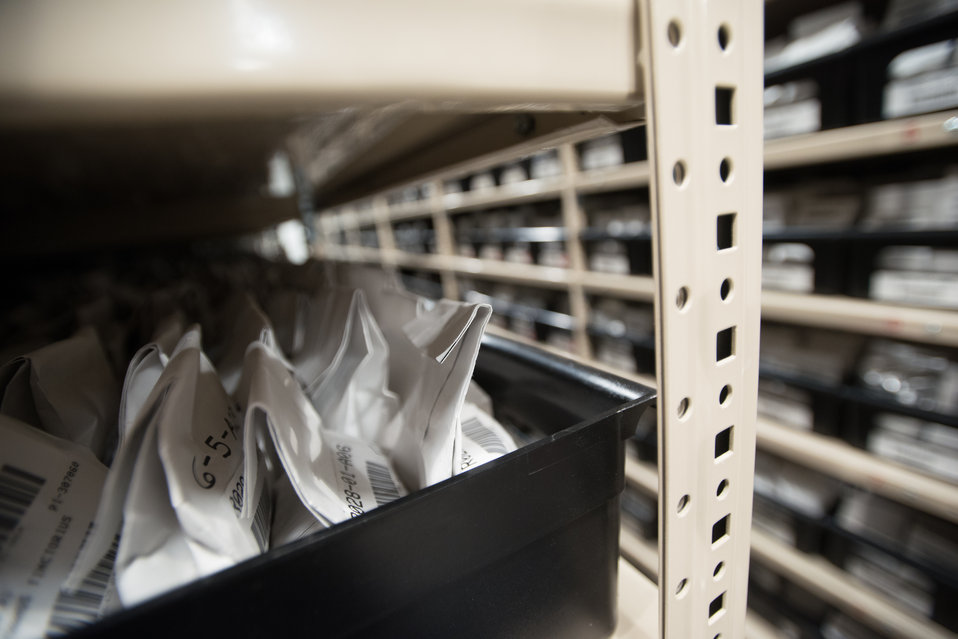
This is the U.S. Department of Agriculture's (USDA) Agriculture Research Service (ARS) National Center for Genetic Resources Preservation (NCGRP) National Plant Germplasm System (NPGS) cold storage vault, in Ft. Collins, CO on Wednesday, Nov. 6, 2013. This secure, long-term storage facility contains nearly 1 million samples of more than 13,200 plant species from the NPGS and from other international plant gene banks, as well as other U.S. government land management agencies. Most of the samples are preserved in the form of seeds. Some germplasm is also preserved as buds, cuttings, and tissue cultures. The 20 NPGS gene banks across the U.S. safeguard, study, and distribute these plant samples, each collected at a particular time and place, including modern and old varieties, wild relatives of crop plants, and genetic stocks. Seeds are packaged in moisture proof foil bags for cold vault storage at -18 °C (0 °F). The packets of seeds are organized in high-density rolling shelves. NCGRP seed preservation protocols are based on more than 50 years of experience and research. The facility opened in 1958 and was expanded in 1992. Preservation of diversity of plant genetic resources helps farmers and conservationists face challenges from climatic change, the spread of new diseases, destructive pests, and abiotic stresses such as drought and salinity.